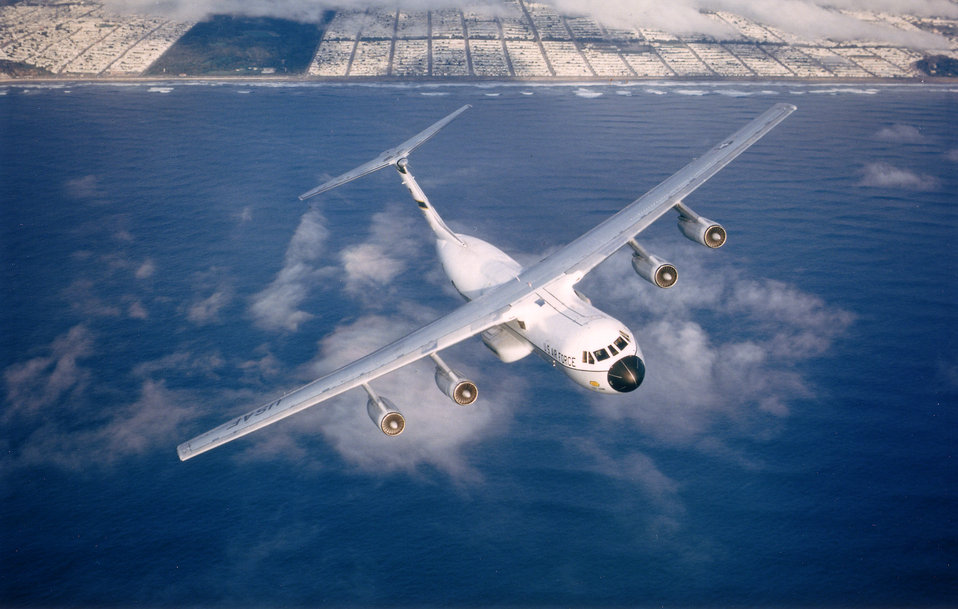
C-141 Starlifter

1970's -- MARCH 1978 -- 3/4 front view of a C-141 Starlifter assigned to the 710th Military Airlift Squadron (AFRES), 60th Military Airlift Wing, in flight over the San Francisco Bay en route to Travis AFB, CA.